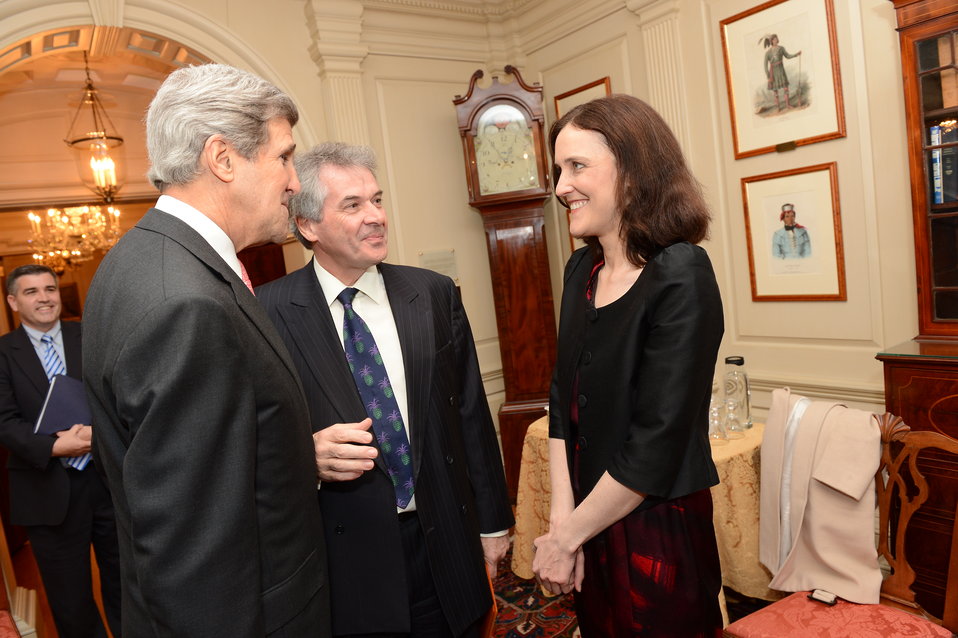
Secretary Kerry Meets With Northern Ireland Secretary Villiers

U.S. Secretary of State John Kerry meets with Secretary of State for Northern Ireland Theresa Villiers at the U.S. Department of State in Washington, D.C., on March 18, 2013.